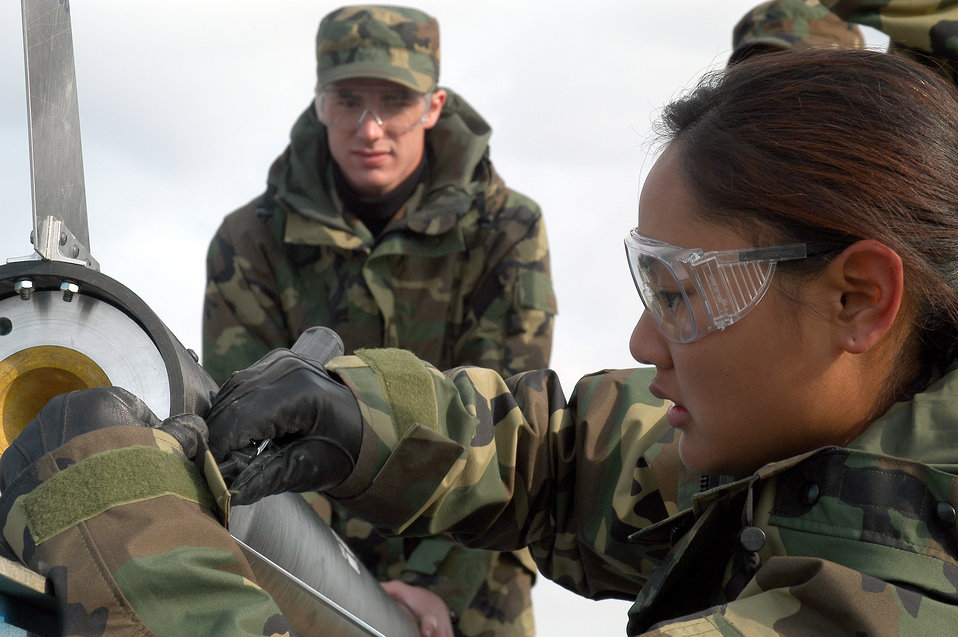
Rocket launch

FORT CARSON, Colo. -- Cadet 1st Class Manessa Catuncan tightens bolts on the exterior casing of a rocket she and 17 other cadets built as part of a class project. U.S. Air Force Academy cadets taking Astronautical Engineering 452/453 Rocket Engineering classes completed their project April 25 by successfully firing the 11.5-foot tall, 7-inch diameter projectile from the Pinon Maneuver area here.